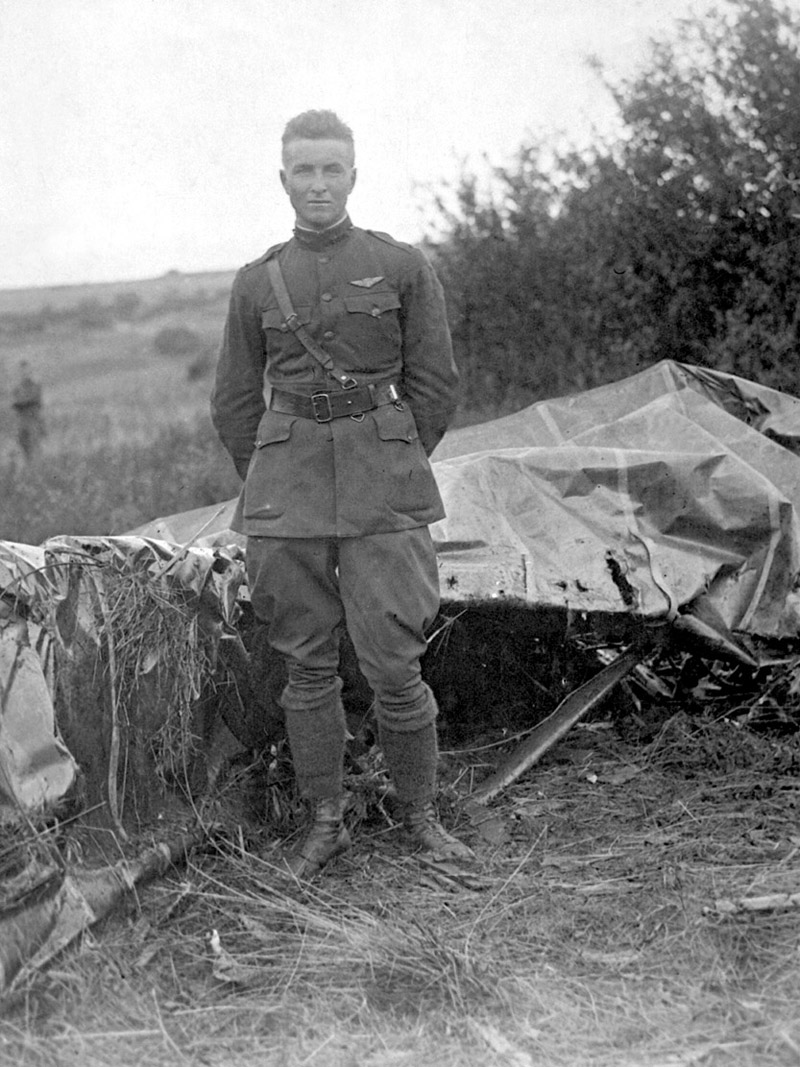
Lt. Frank Luke

During World War I in 1918, Lt. Frank Luke brought down three German observation balloons in 35 minutes. Lt. Luke stands by one of the balloons he brought down.